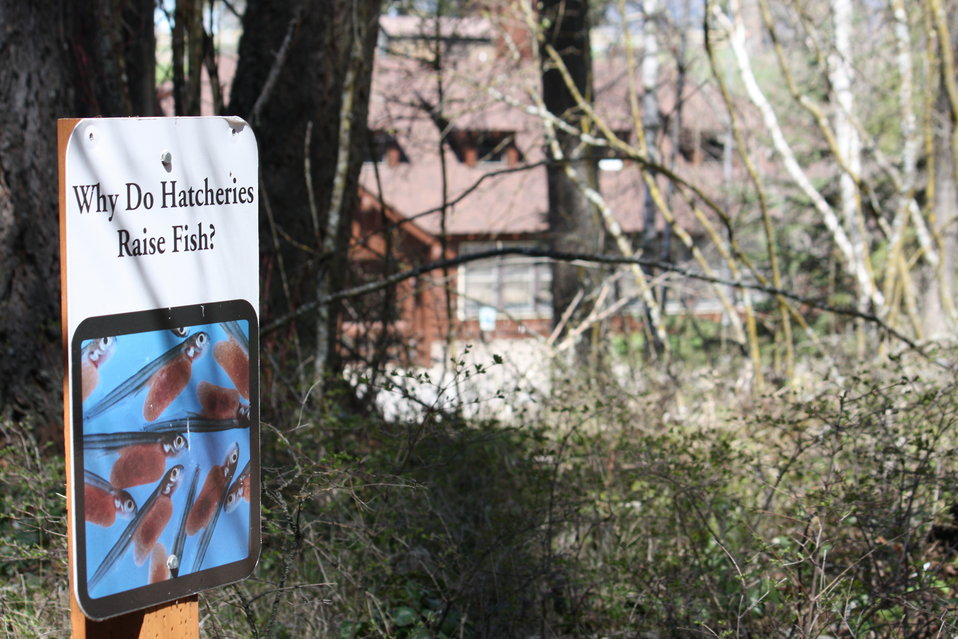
Creston National Fish Hatchery Nature Trail

Creston National Fish Hatchery provides many educational opportunities for area schools and families.